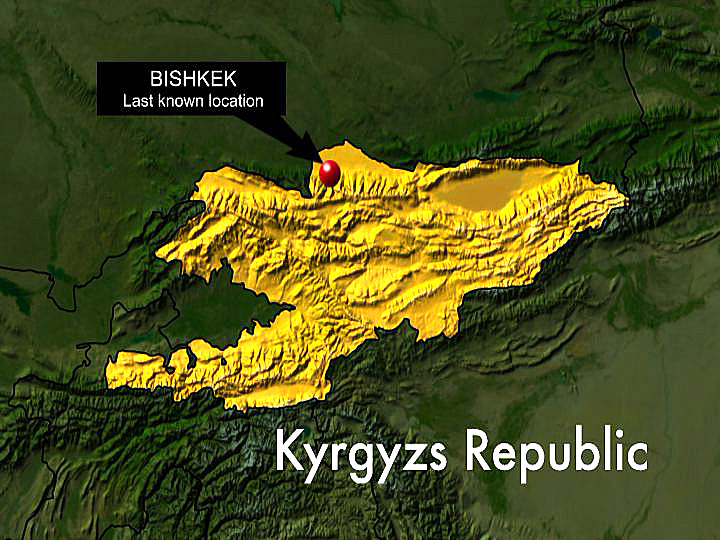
Searchers 'leaving no stones unturned' in hunt for missing major

Maj. Jill Metzger, the personnel chief at the 376th Air Expeditionary Wing at Manas Air Base, Kyrgyzstan is still missing after disappearing during a trip to a shopping center in the nearby capital city of Bishkek.